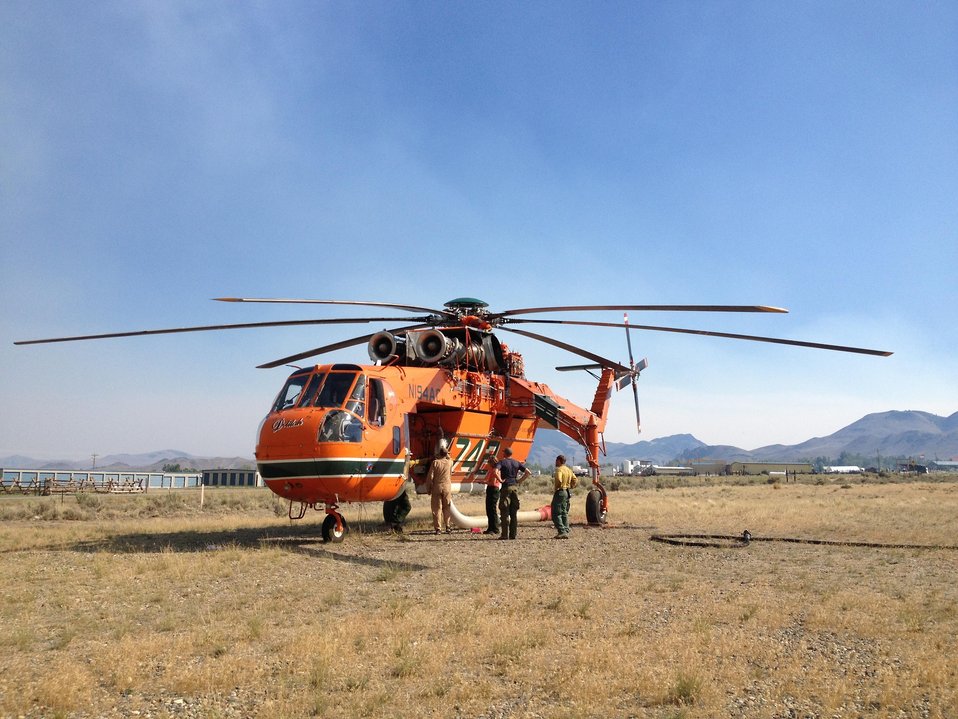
Erickson sky crane sits at Challis Airport awaiting location of water drop on the Lodgepole Fire. The Lodgepole Fire in the Salmon-Challis National Forest near Challis, ID began on Jul. 20, 2013 by lightning has consumed approximately 13,700 acres and is approximately 15% contained.